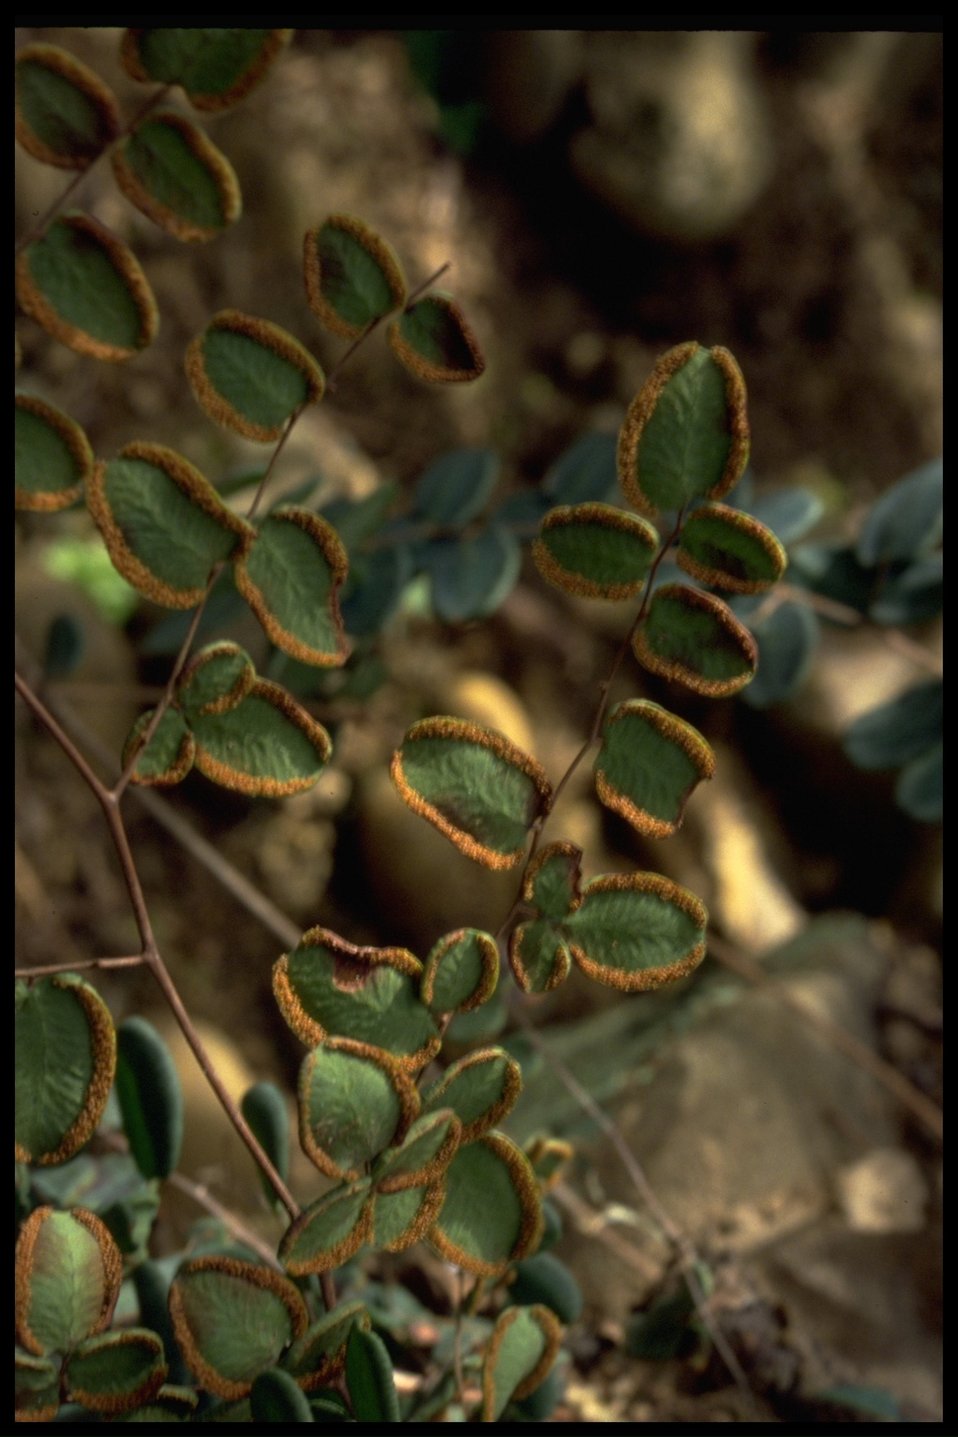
Pellaea andromedifolia, or commonly known as the Coffee Fern.